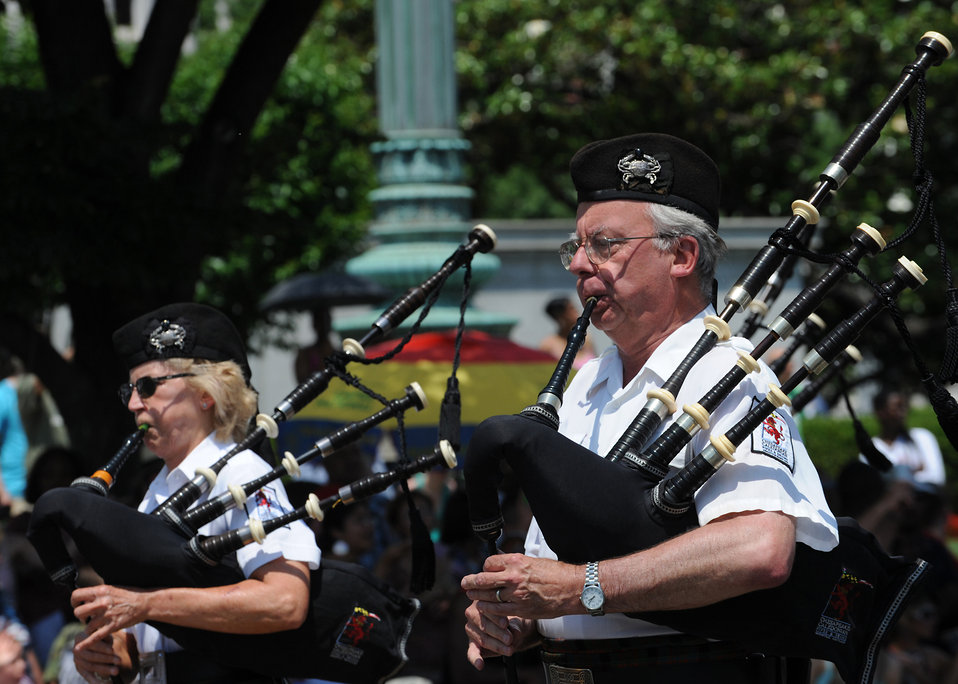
National Memorial Day Parade

The Chesapeake Caledonian Pipes and Drums Band performs at the National Memorial Day Parade, May 28, 2012 in Washington D.C. The annual National Memorial Day Parade is an opportunity for thousands of patriotic Americans to come together and honor those who have sacrificed so much in service to our country.